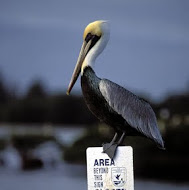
Brown pelican

Scientific name: Pelecanis occidentalis
Status: Recovered